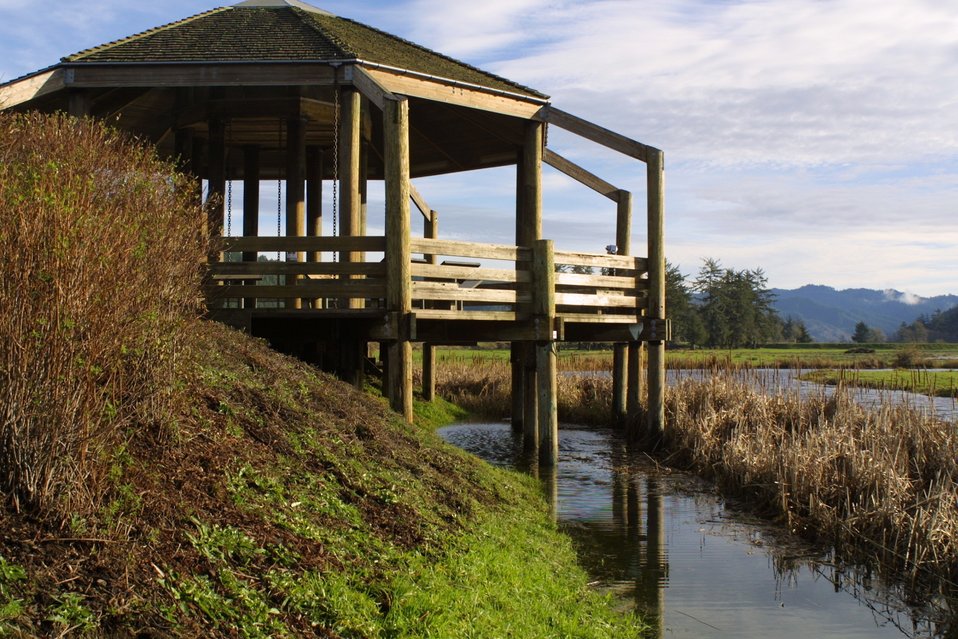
Wildlife viewing platform at the Dean Creek Watchable Wildlfie site near Reedsport, Oregon.